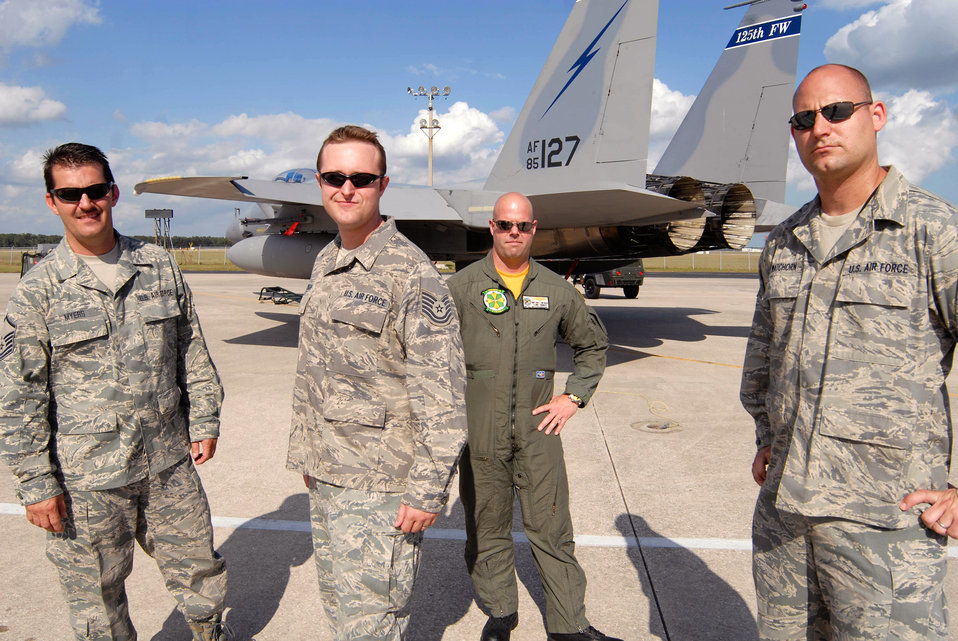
Attitude PB

American Attitude, from left: Air National Guardsmen Master Sgt. Marc Myers and Air Force Tech. Sgt. Chris Henderson, Navy Reserve Petty Officer 1st Class Matt Smithers and Air National Guardsman Master Sgt. Shawn Watchhorn.